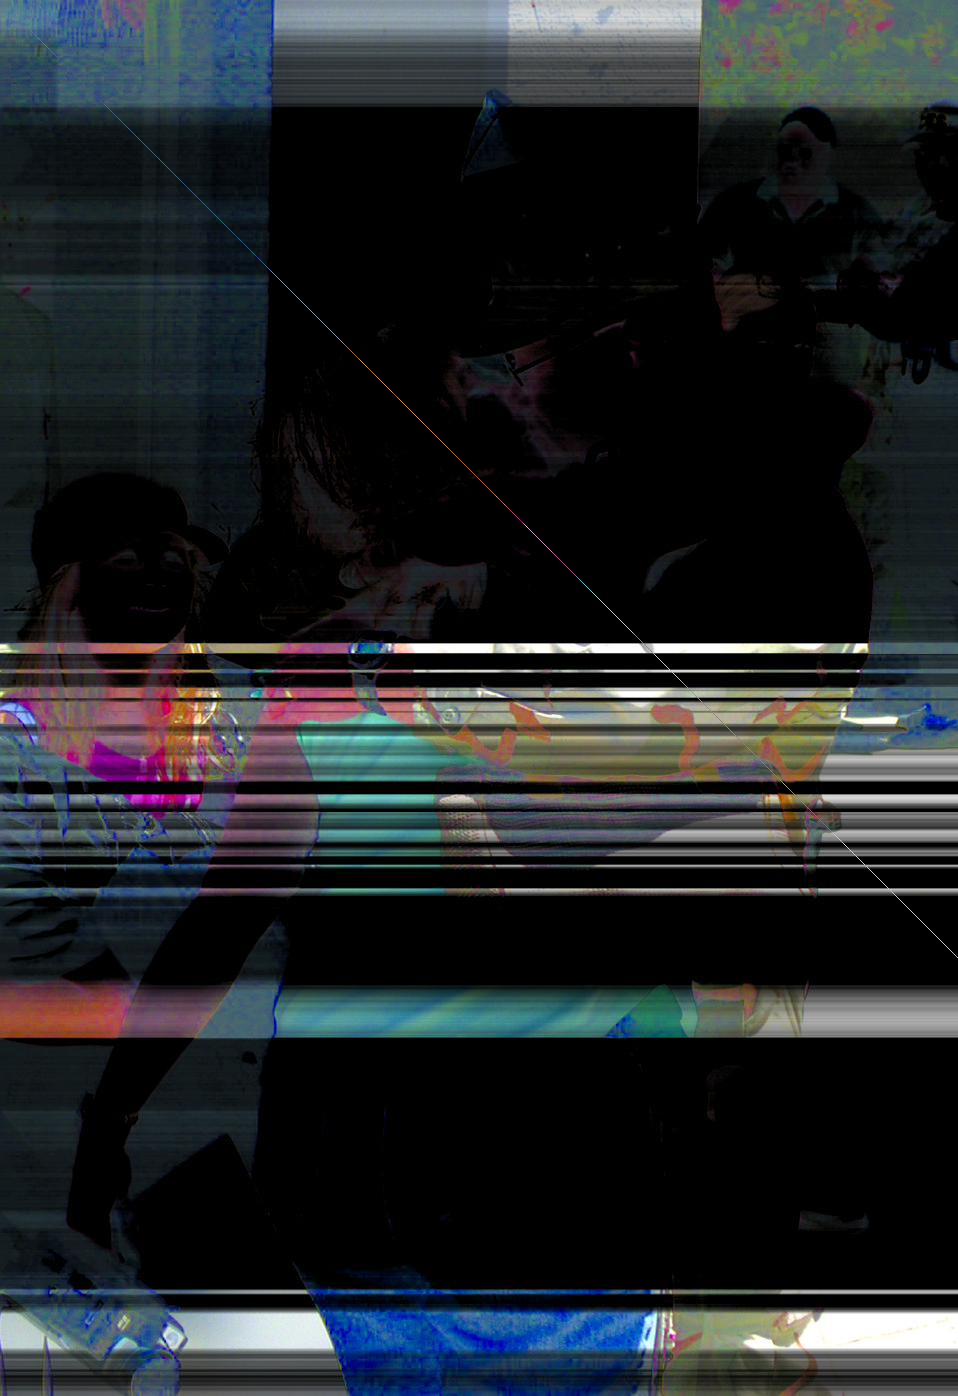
VANDENBERG AIR FORCE BASE, Calif. -- Tech Sgt. Wayne Moses is greeted by his wife, Erin, and daughter, Caitlin, after returning from a six-month deployment to Southwest Asia. Sergeant Moses is assigned to the 30th Security Forces Squadron here.